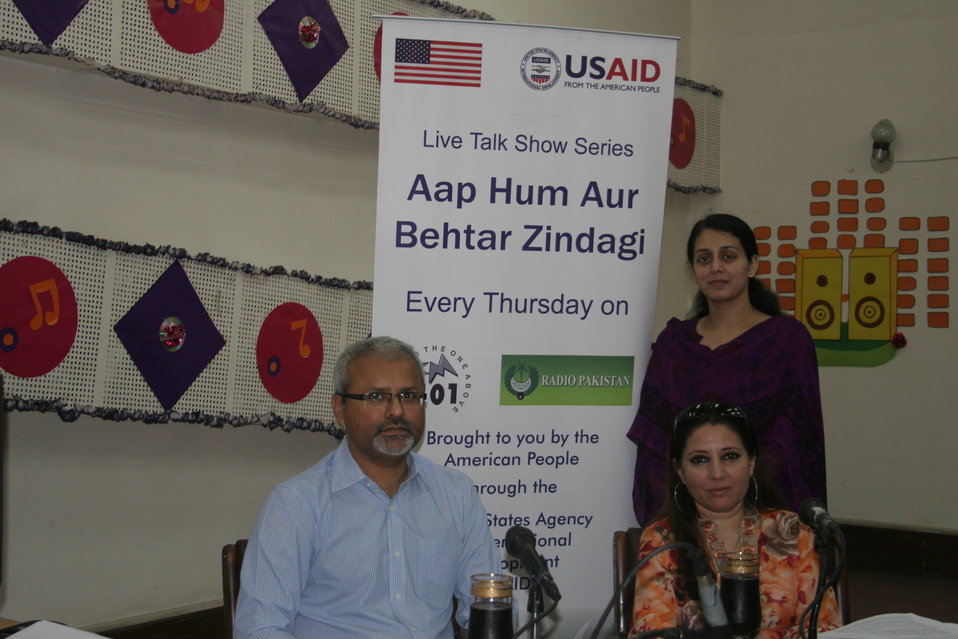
2011 May - Since January 2011, USAID’s Development Outreach and Communications Office has been running a 30-minute live Radio talk show in Urdu, “Aap Hum Aur Behtar Zindagi”, (Together, for better future – from the American people) on Thursdays about USAID-funded projects. Aap Hum Aur Behtar Zindagi is broadcast in Urdu on FM 101 through nine stations with the aim to create awareness amongst Pakistani audiences about USG development assistance program in the country. FM 101 is part of the Pakistani Broadcasting Corporation Network, with estimated 70% coverage of the country. Each show features project experts alongside USAID technical and programming staff discussing topics that have included issues as diverse as higher education, earthquake reconstruction and mango production. During this show, the participants answer questions live via phone and SMS from listeners across the country and answer questions directly. Today’s show, on USAID’s initiative to enhance the competitiveness of the mango sector by identifying and removing constraints to investments, sales and job creation through its FIRMS Project, featured Kanwal Bokharey, Economic Growth Advisor with USAID/Pakistan's Economic Growth Office and Farrukh Mehboob Khan, of the FIRMS Project. They spoke in detail about the program objectives and answered live questions. The program witnessed the most live calls and SMS ever received in this series. Callers asked about what would be the economic impact on country’s GDP with this export; whether USAID is running this program in concurrence of GoP and how USAID is offering value chain production to the mango industry.